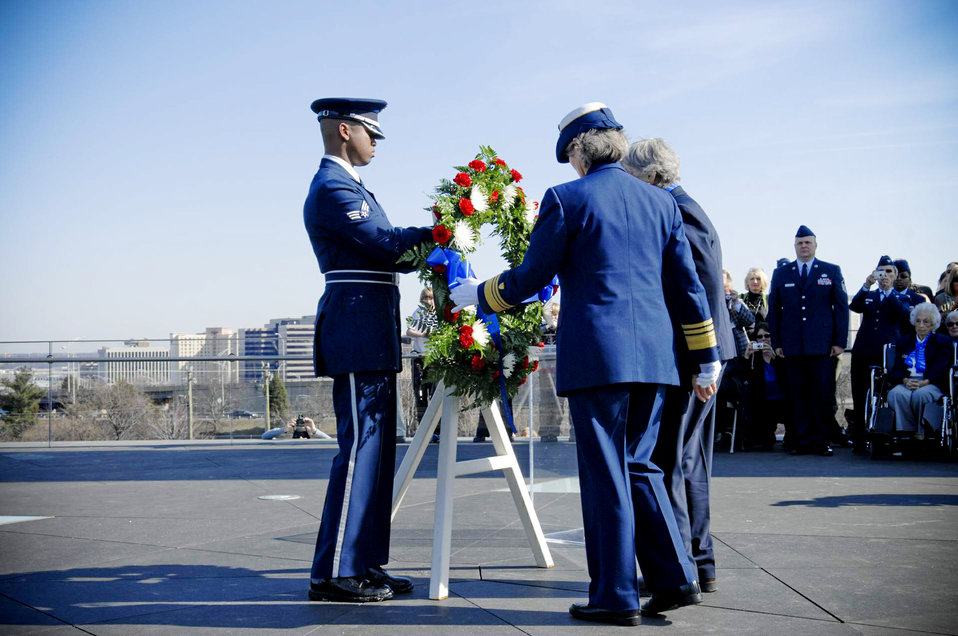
Female World War II pilots lay wreath at Air Force Memorial

An Air Force Honor Guard member presents a memorial wreath to Women Airforce Service Pilot member Dawn Seymour (right) while her escort, retired Coast Guard Vice Adm. Vivien Crea (center) looks on during a remembrance ceremony March 9, 2010, at the Air Force Memorial in Arlington, Va.